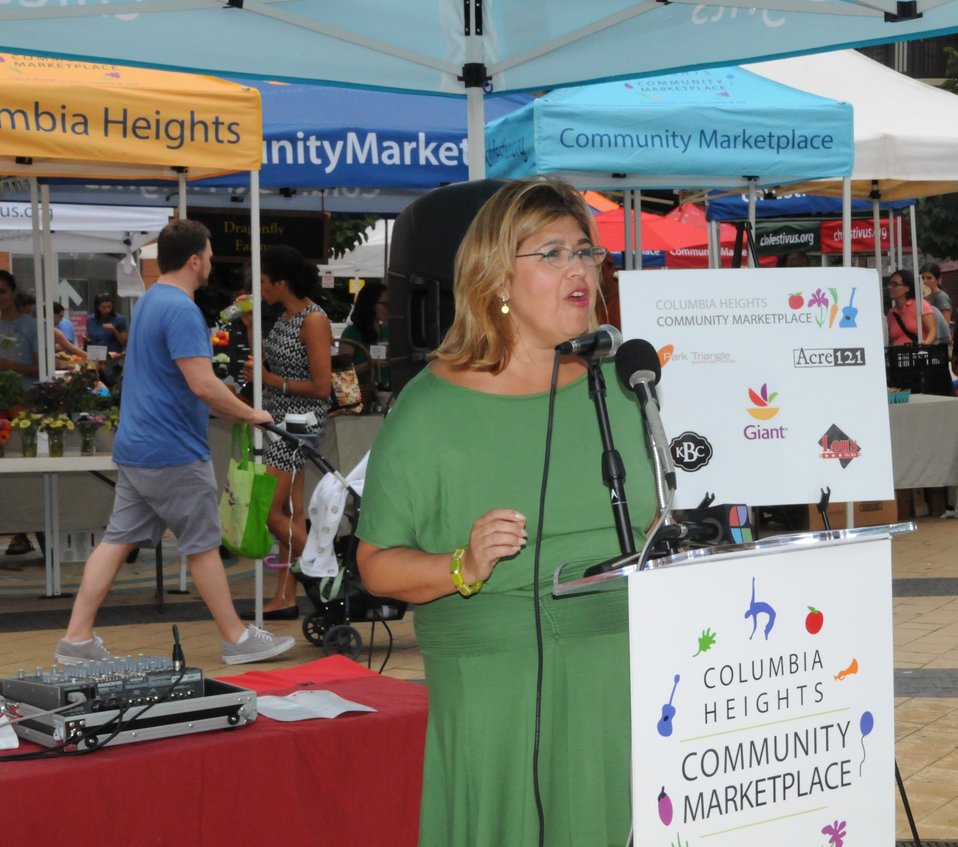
Anne Delivering Message

AMS Administrator, Anne Alonzo gives remarks at the Columbia Heights Community Marketplace.